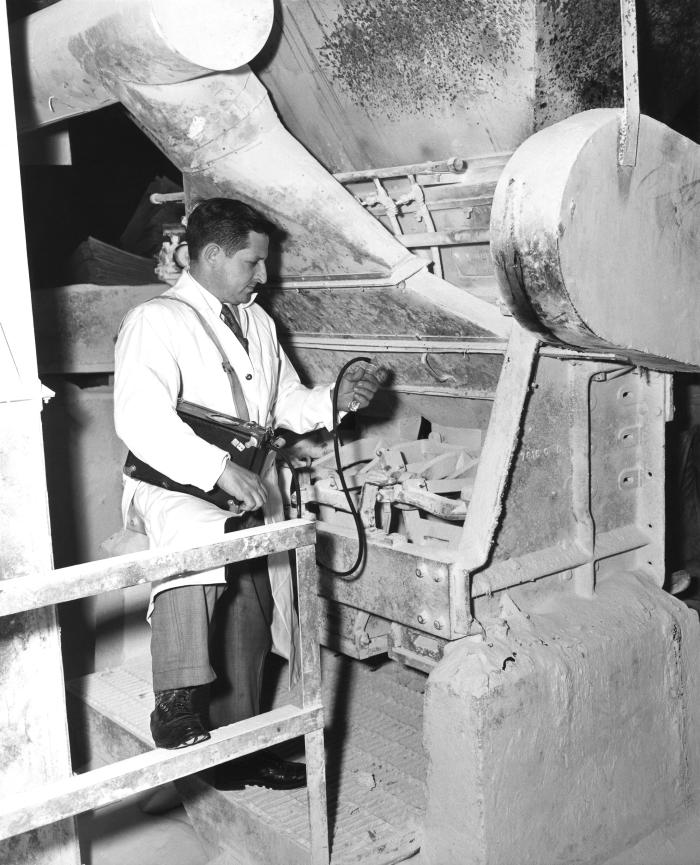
This historical 1953 photograph was provided by the Center for Disease Control's (CDC), National Institute for Occupational Safety and Health (NIOSH). Depicted here, was sanitarian Joseph Connor, while he was collecting dust samples using a 'miget impinger' from the air around this machine's rear-exhaust system. These samples would show whether or not a worker was inhaling injurious levels of airborne particulates liberated in this Baltimore, Maryland, National Gypsum Company's gypsum-making inductrial process. Note that Mr. Connor himself, was not wearing any filtered breathing devices.